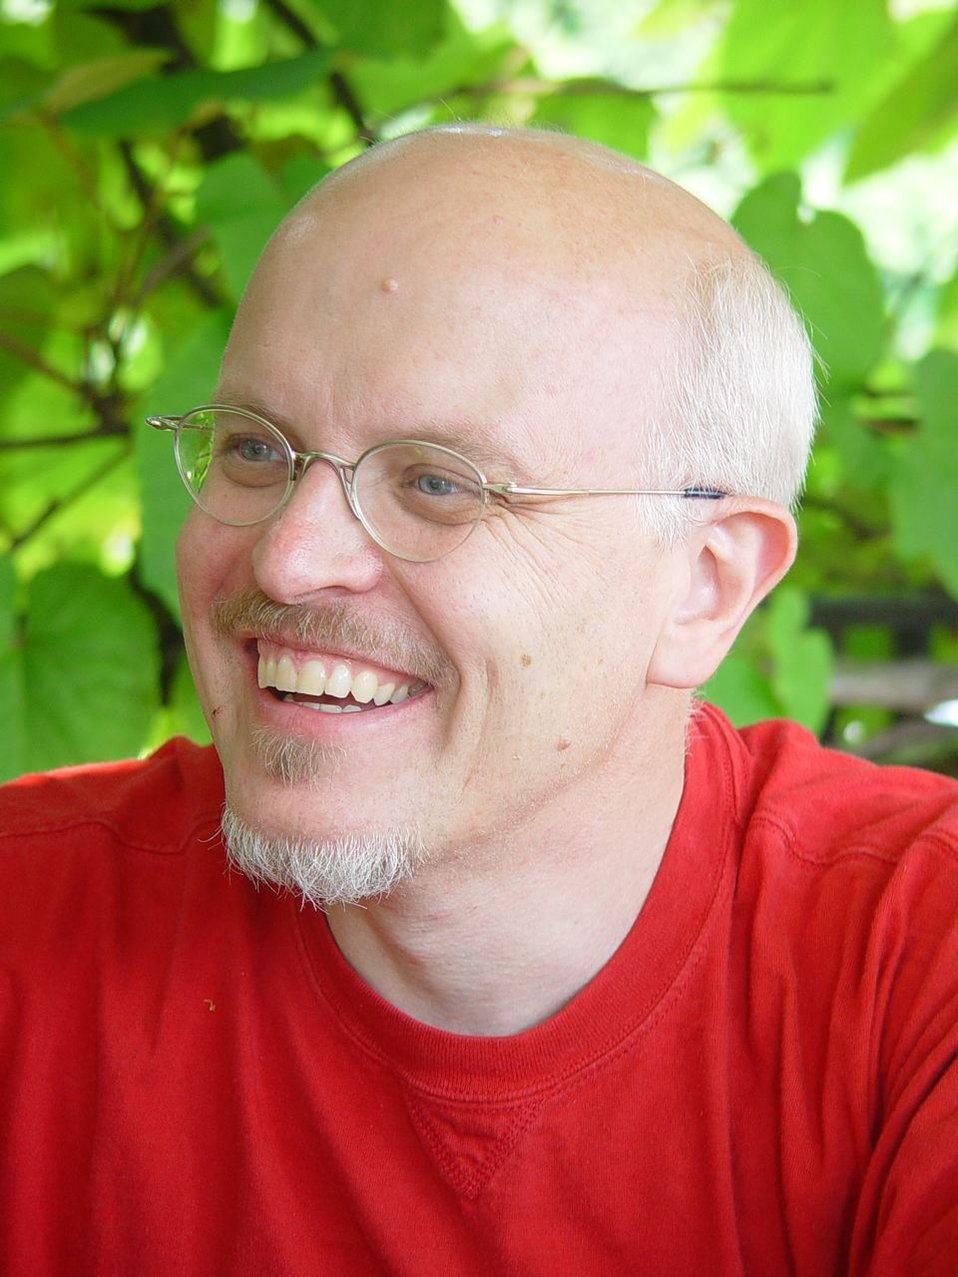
Designer Jan Lorenc